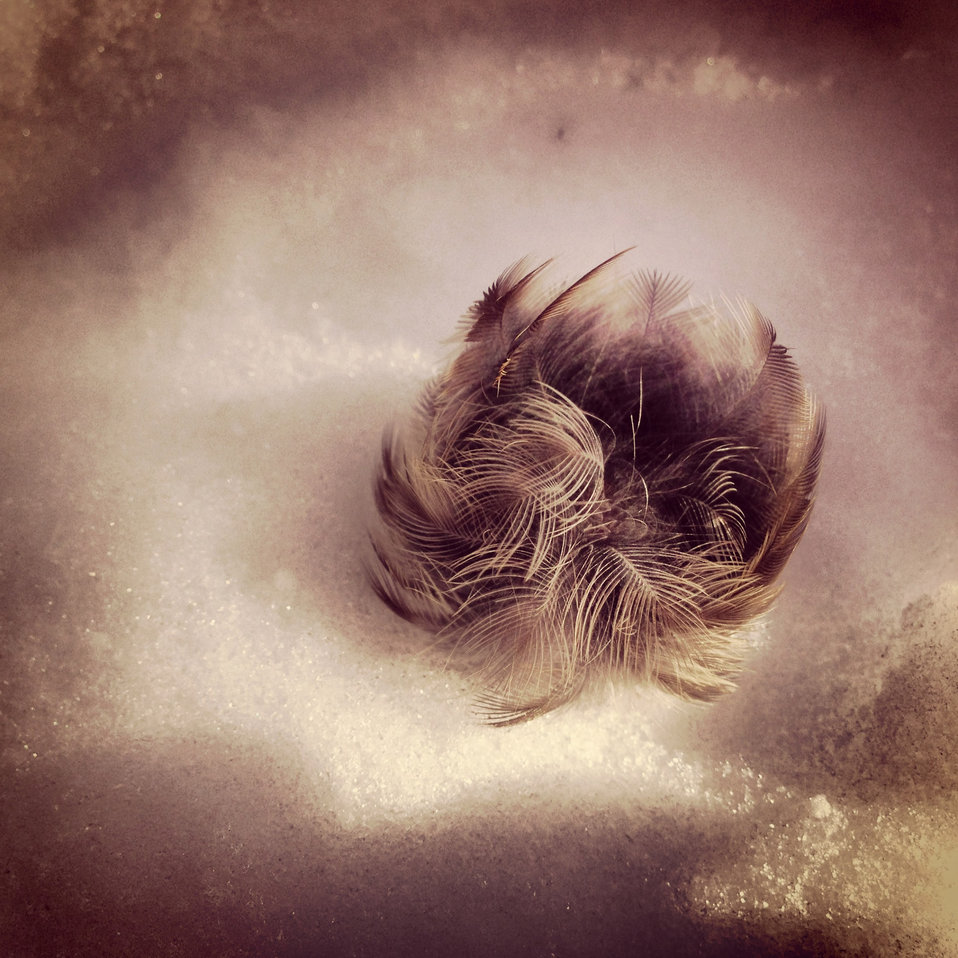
Feather in the snow

Feathers spotted on a snowy morning in the catskills.